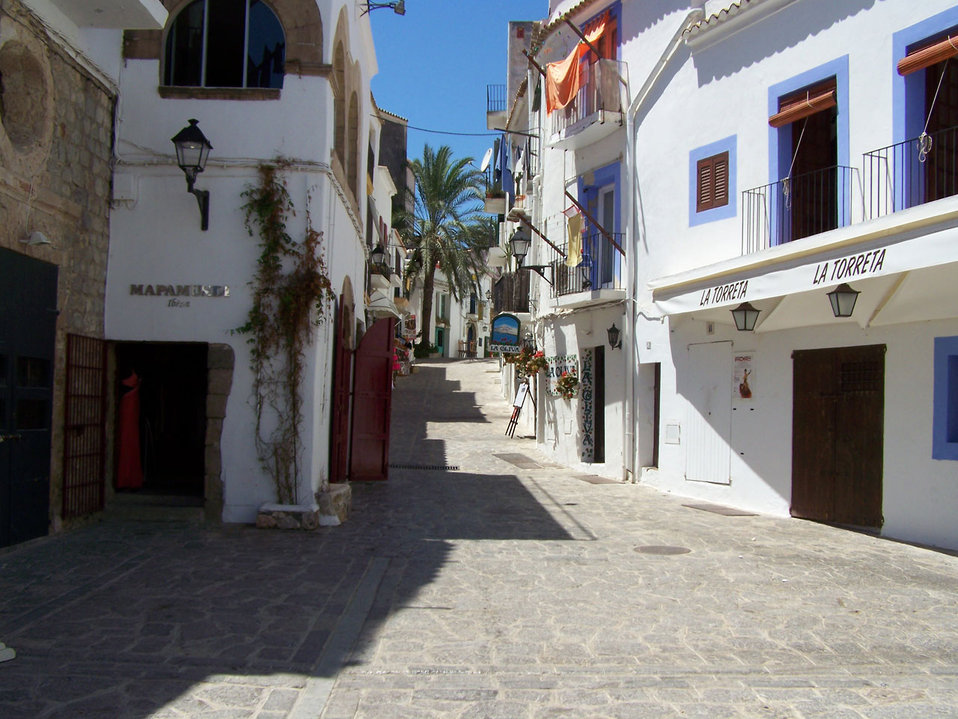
Quiet spanish street

Another one of those holiday snaps.